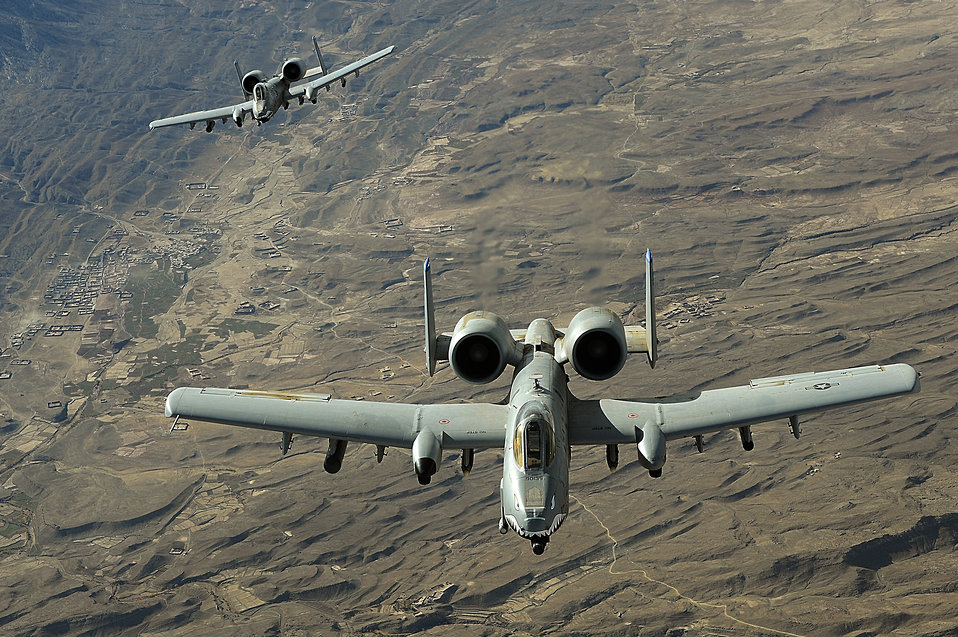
March 5 airpower summary: A-10s provide aerial security

Two A-10 Thunderbolt IIs in-flight over Afghanistan providing aerial security for coalition forces. A-10s perform shows of force to deter enemy activities and provide close-air support to coalition forces in Southwest Asia.